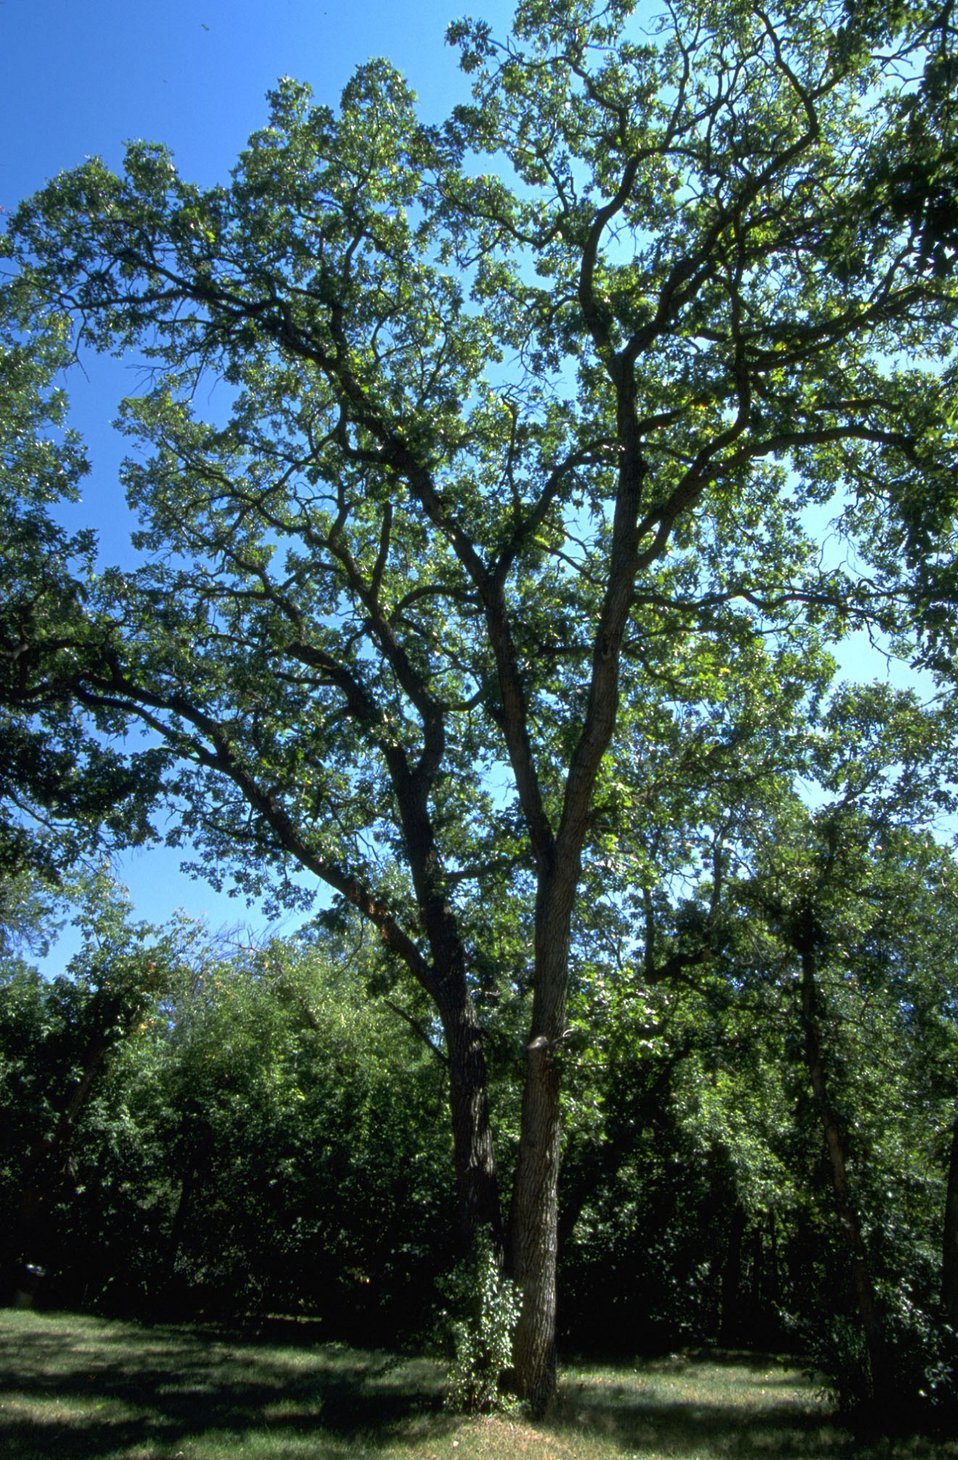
Tree at Alkali Creek Trailhead, Fort Meade South Dakota